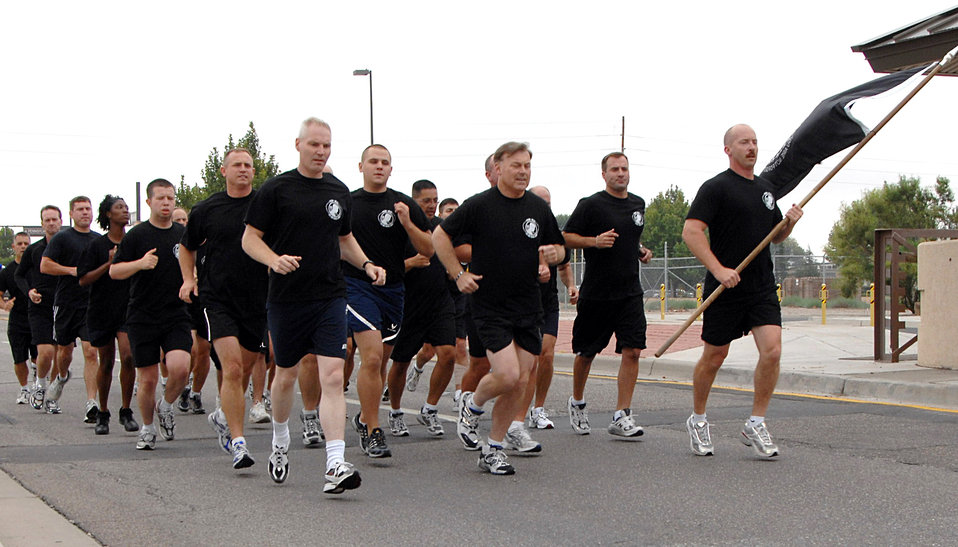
POW/MIA 24-hour run

Air Force Operational Test and Evaluation Center Commander Maj. Gen. Stephen T. Sargeant (front middle) and Vice Commander Col. Matthew Bartlett (front left) lead a formation of Airmen from Kirtland AFB, N.M. during the last lap of the base's 5th Annual POW/MIA 24-Hour Vigil Run before delivering the POW/MIA flag to the off-base New Mexico Veterans Memorial Sept. 21 as part of the combined POW/MIA Recognition Day ceremony sponsored by the Kirtland and Albuquerque communities.